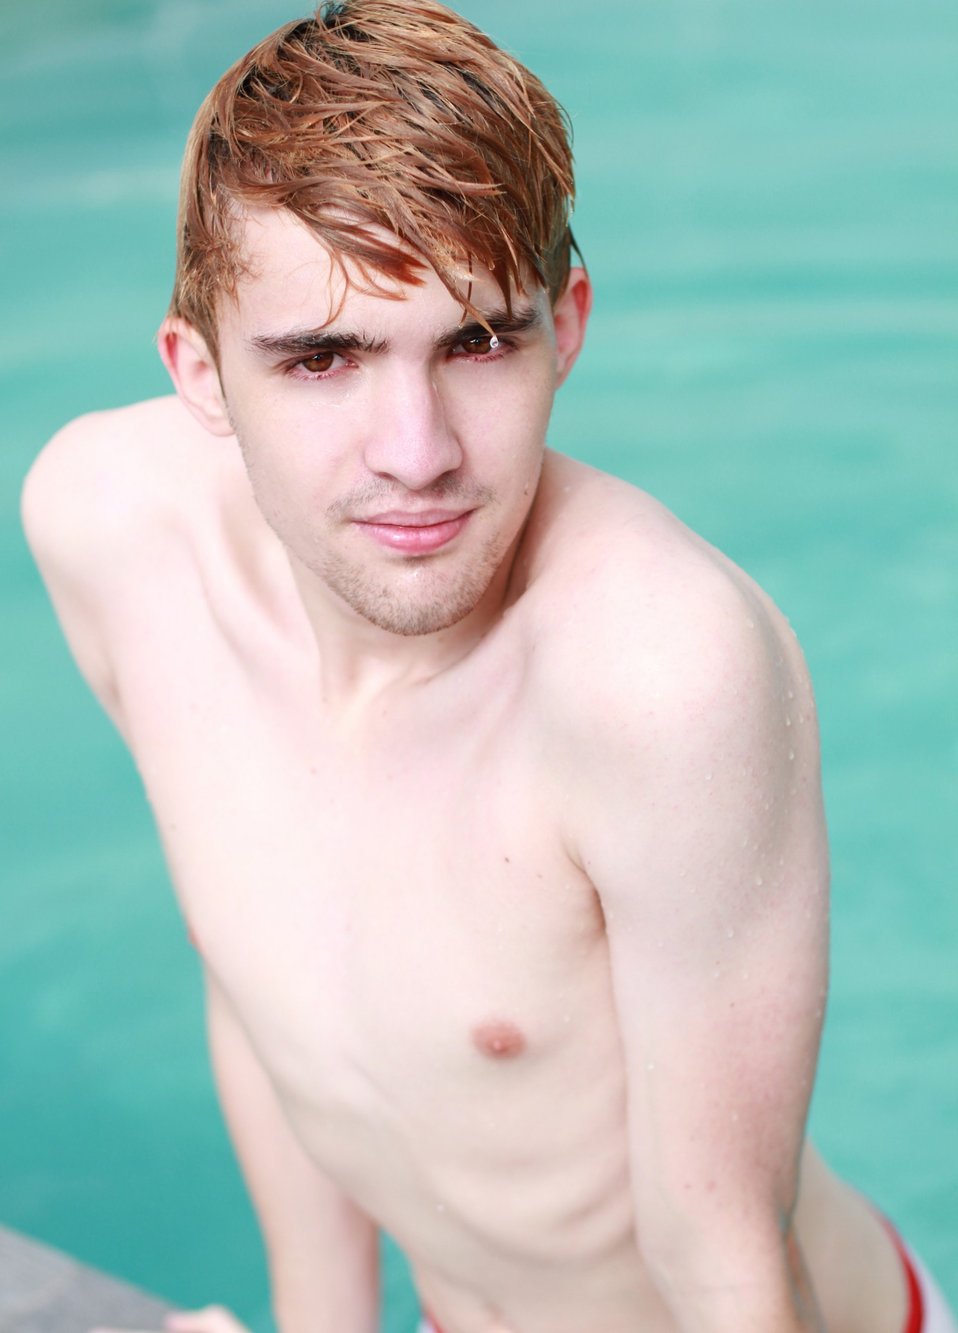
Swimming

A boy jumping out of a swim.